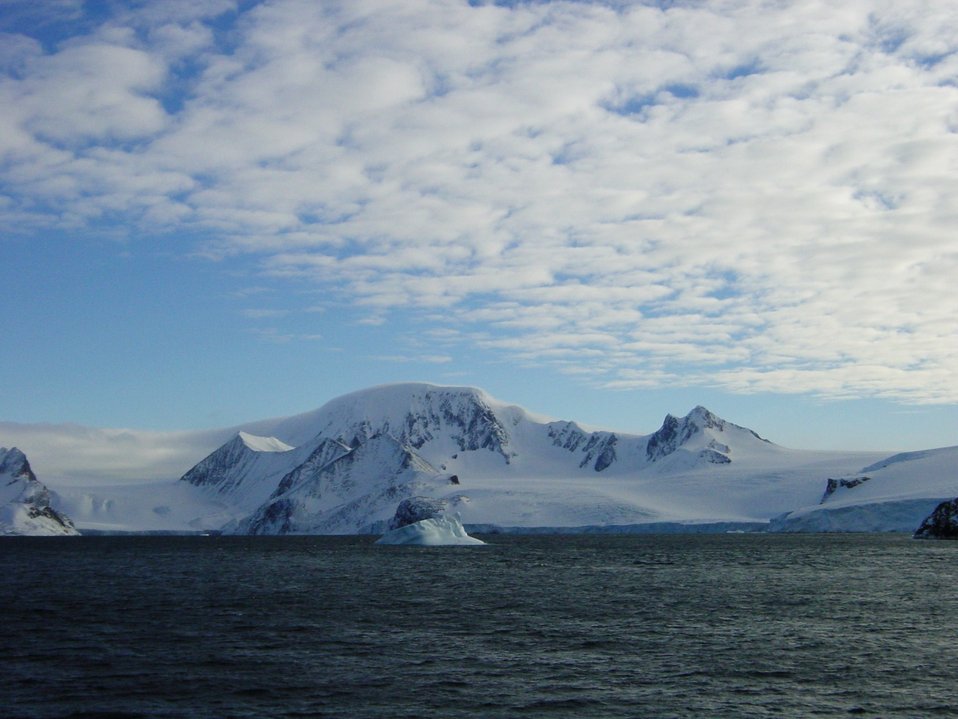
Ice, rock, snow, and ocean dominate the Antarctic Peninsula landscape.